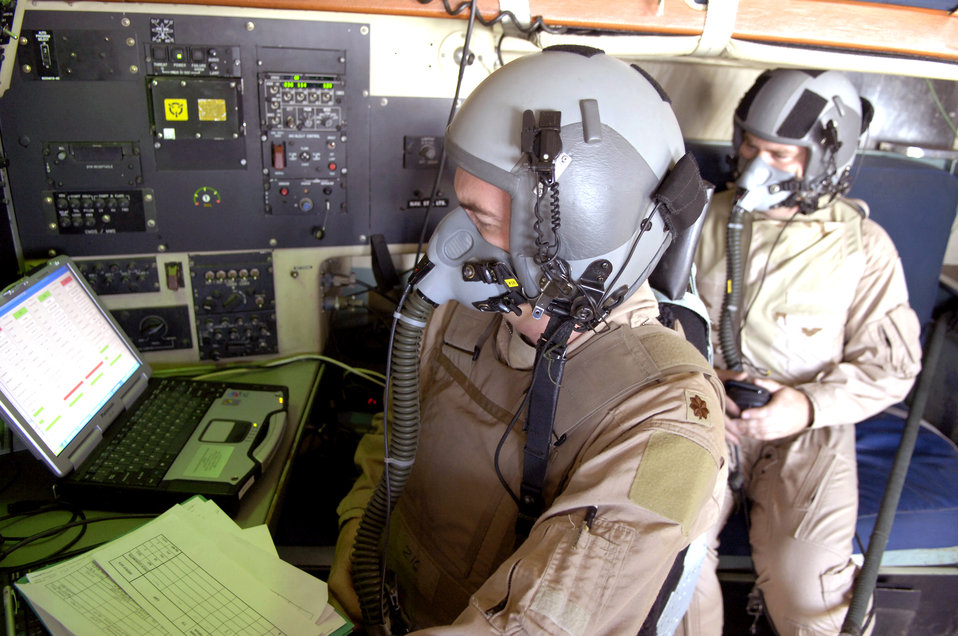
Bagram C-130s drop high-tech cargo delivery system

Maj. Russ Hedden and Maj. Daniel DeVoe look over the Joint Precision Air Drop System mission planner computer while on an airdrop mission over Afghanistan Aug. 25. Major Hedden is a navigator with the 774th Expeditionary Airlift Squadron. Major DeVoe is the command tactician at the Air Mobility Warfare Center.